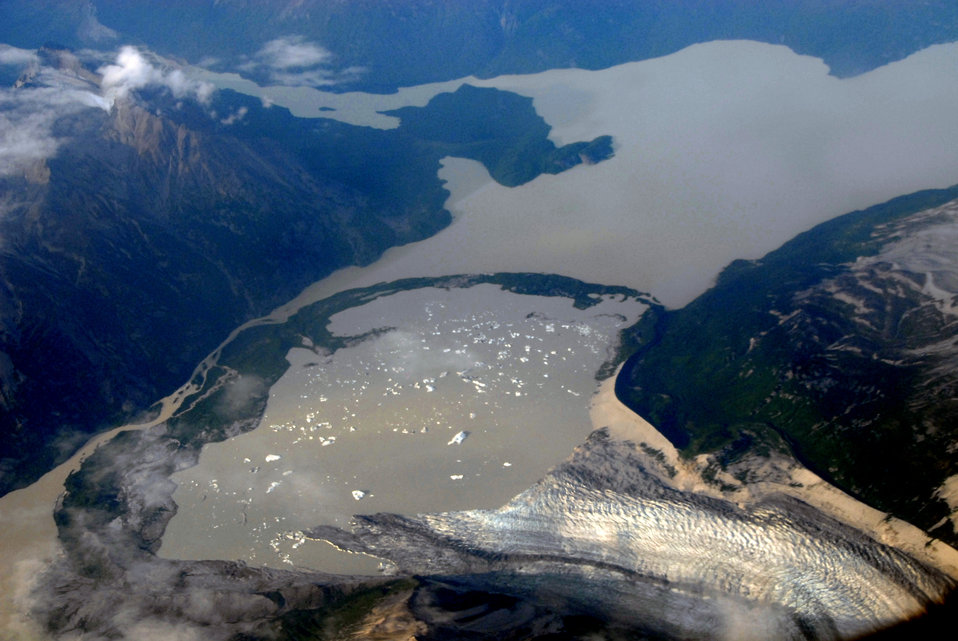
Rural Tour 0380

Rural Tour Alaska Aug 2009